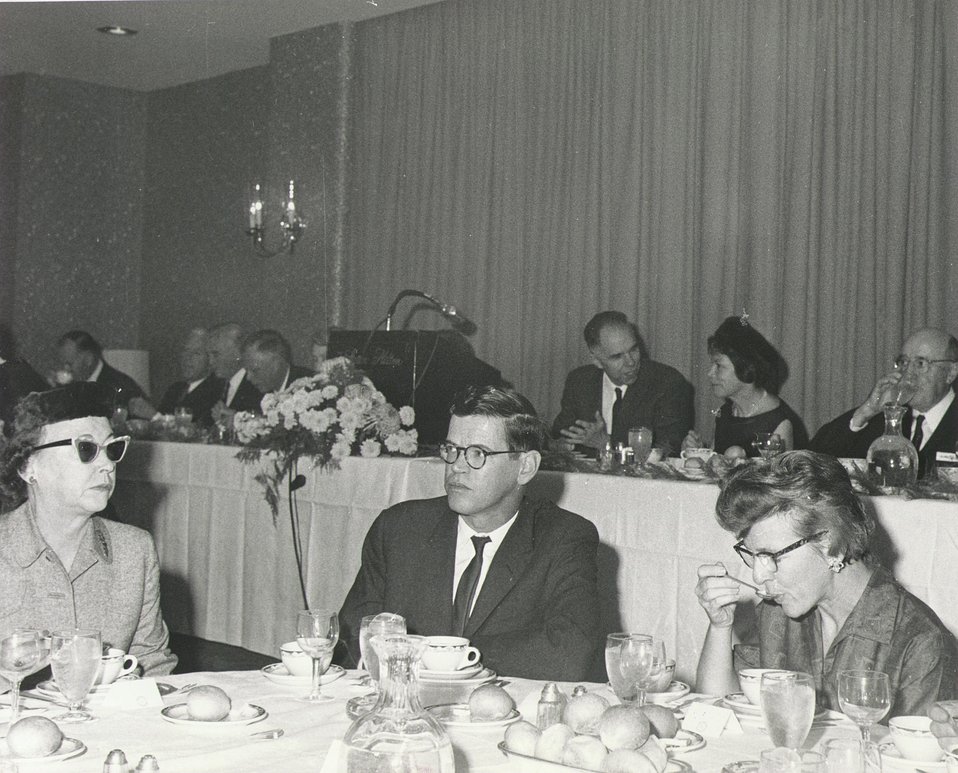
Fermi Award Ceremony for Teller in 1962.